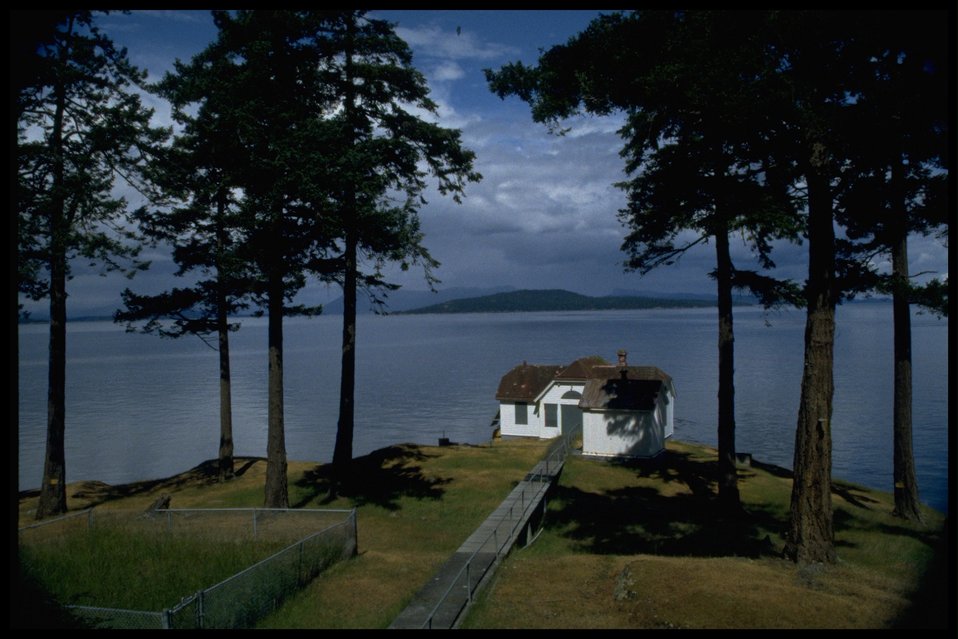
The view of the light station from the living quarters at Turn Point.